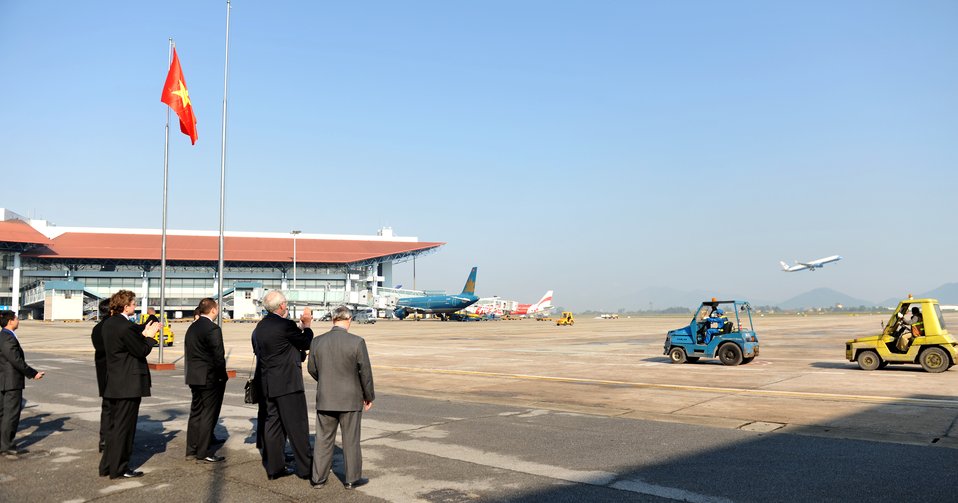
Secretary Kerry Departs Hanoi's Noi Bai International Airport

U.S. Secretary of State John Kerry departs Hanoi's Noi Bai International Airport in Vietnam on December 17, 2013.